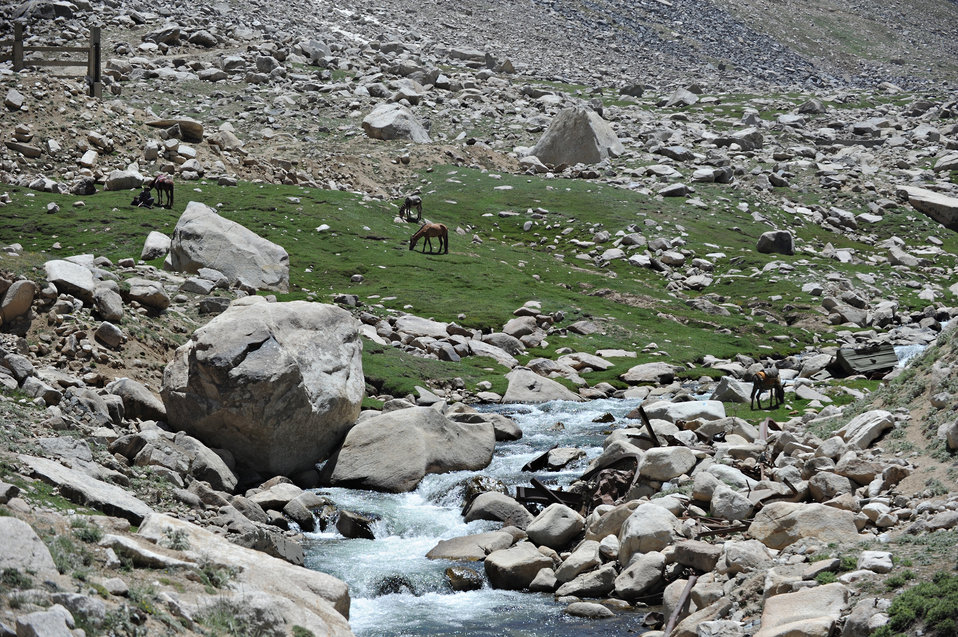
Landscape near the North end o the Salang Tunnel on the border of Parwan and Baghlan Provinces, Afghanistan, on Wednesday, June 15, 2011. (S.K.Vemmer/Department of State)